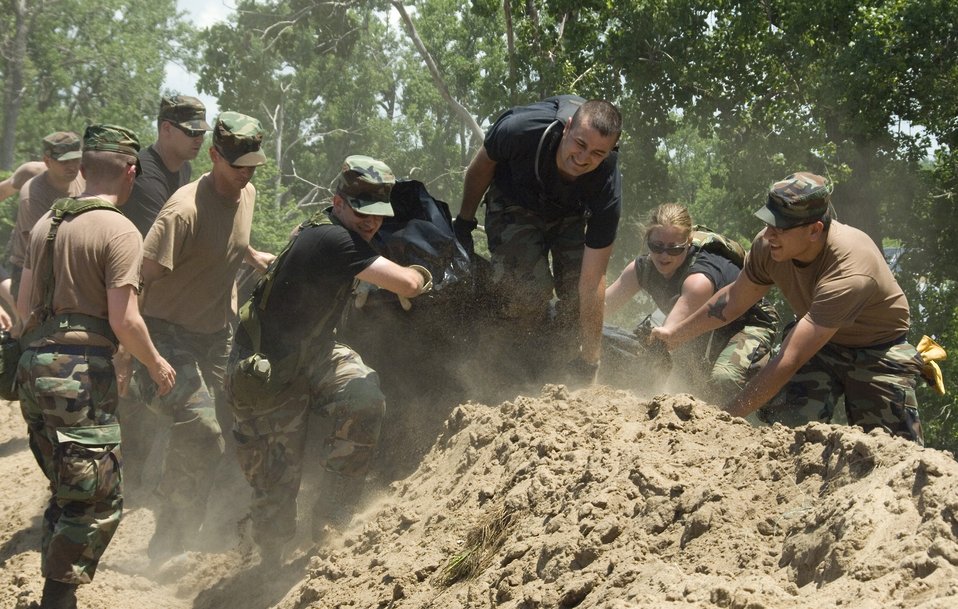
Illinois Air National Guard provides help

Airmen from the Illinois Air National Guard spread sheets of plastic over reinforced levees along the Mississippi River June 19 near Pleasant Hill, Ill. The plastic sheets prevent erosion that could cause the levee to fail and flood thousands of acres of farmland and homes.